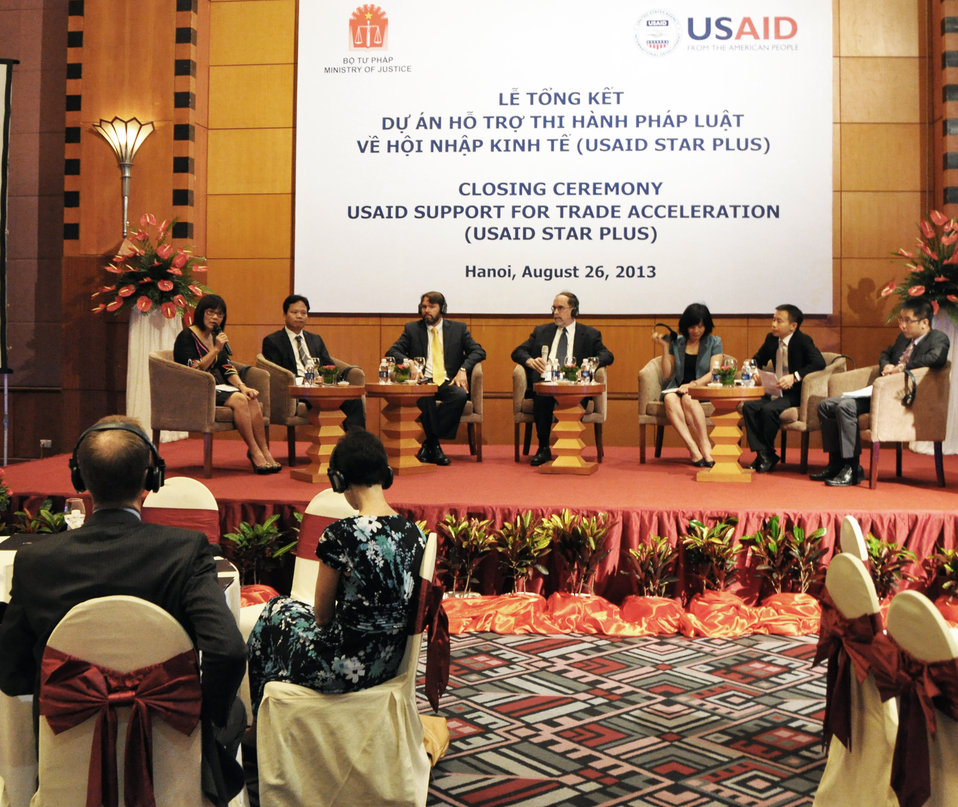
USAID's Support for Trade Acceleration Project (USAID STAR Plus) Closing Ceremony

Hanoi, August 26, 2013.